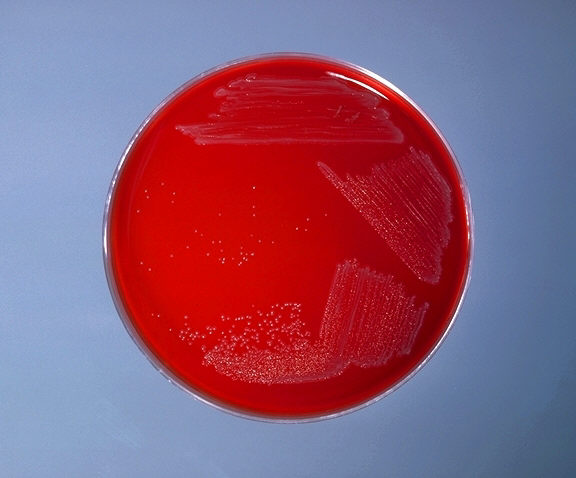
Blood agar plate culture of Corynebacterium renale.